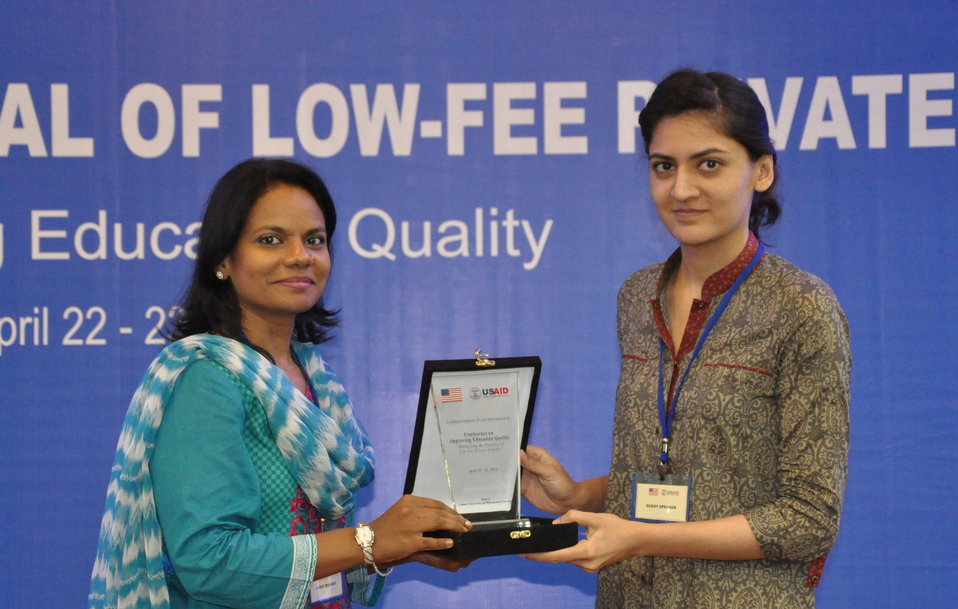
Guest speaker receiving a shield